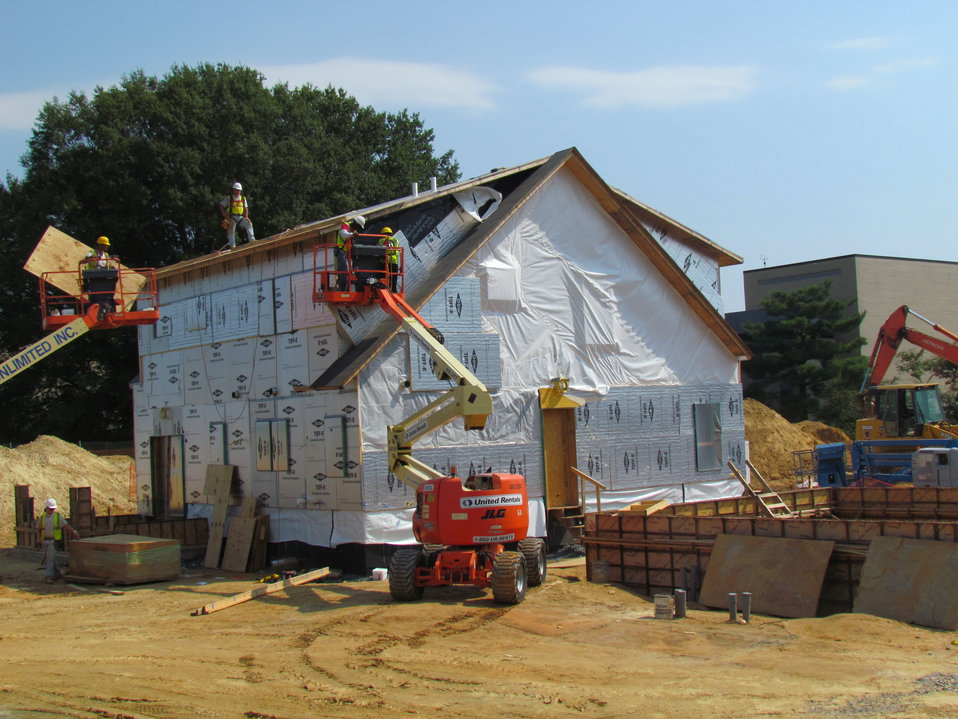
Net-Zero Energy Residential Test Facility - Photo showing workmen installing upper layer of plywood sheating on main roof. Underneath this layer of sheathing is three layers of foam insulation and a bottom layer of plywood sheathing.